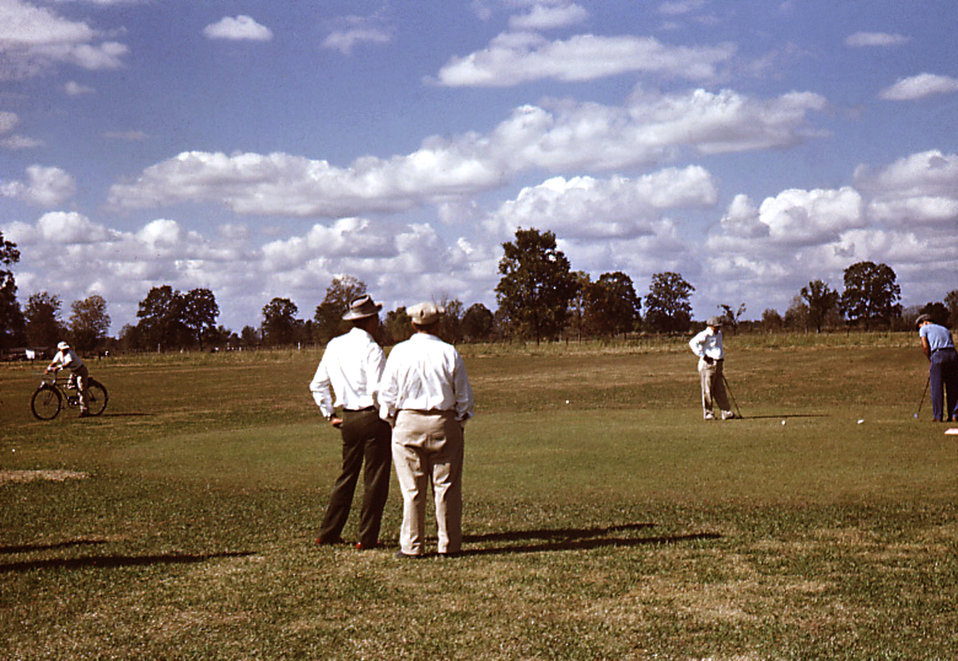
This historic image depicted a number of Carville, Louisiana Leprosarium patients, motor boating out on Lake Johansen on a beautiful day, for some of the patients owned boats while at the hospital during their treatment. Lake Johansen, which measures approximately 500 feet in length, by 250 feet wide, was named after one of the Leprosarium's Chief Medical Ofiicers, Dr. Frederick A. Johansen.